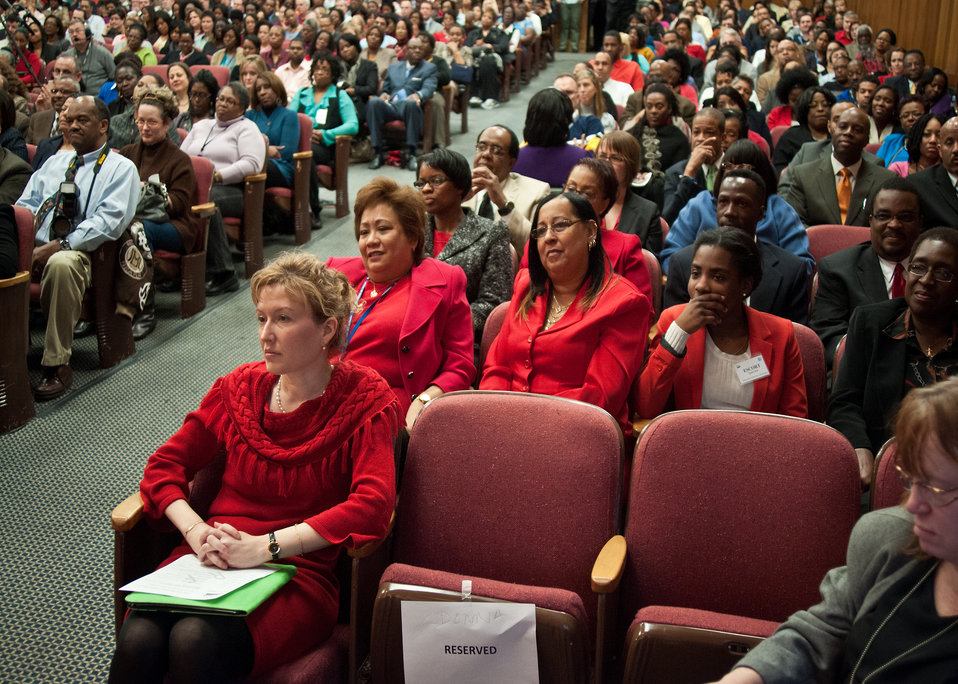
Many women wore red supporting “Women Education/Women Empowerment” at the United States Department of Agriculture Black History Month celebration “Black Women in American Culture and History” in Washington, D.C. on Thursday, February 16, 2012.